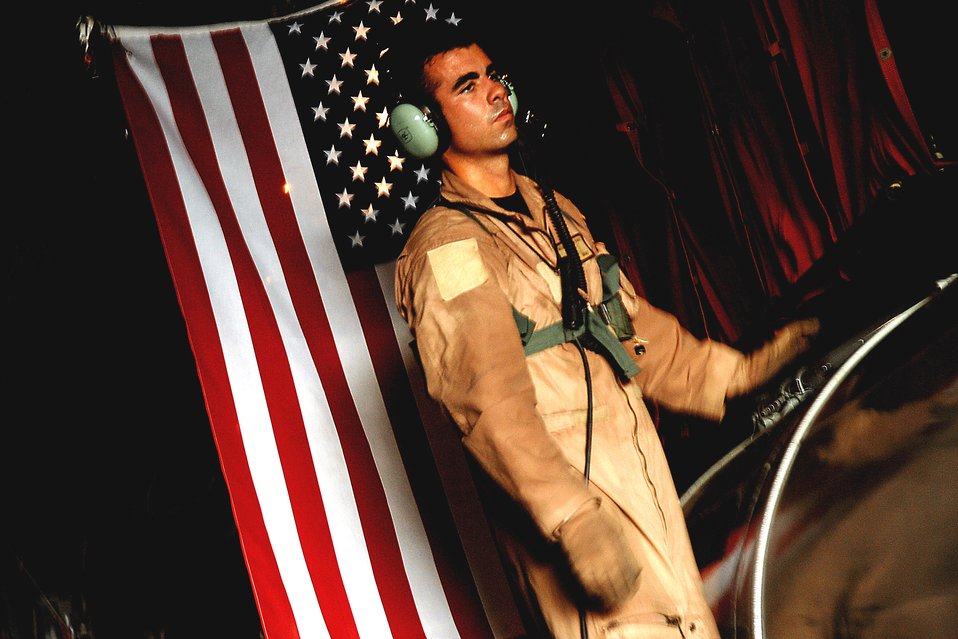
Djibouti Mission

Airman 1st Class Nicholas Greer ties down equipment in the back of an HC-130 Hercules June 3 before taking off on a training mission off the coast of Djibouti. Airman Greer is deployed to Combined Joint Task Force-Horn of Africa out of Camp Lemonier, Djibouti. Airman Greer is a an aircraft loadmaster from the 71st Search and Rescue Squadron and is deployed from Moody Air Force Base, Ga.,